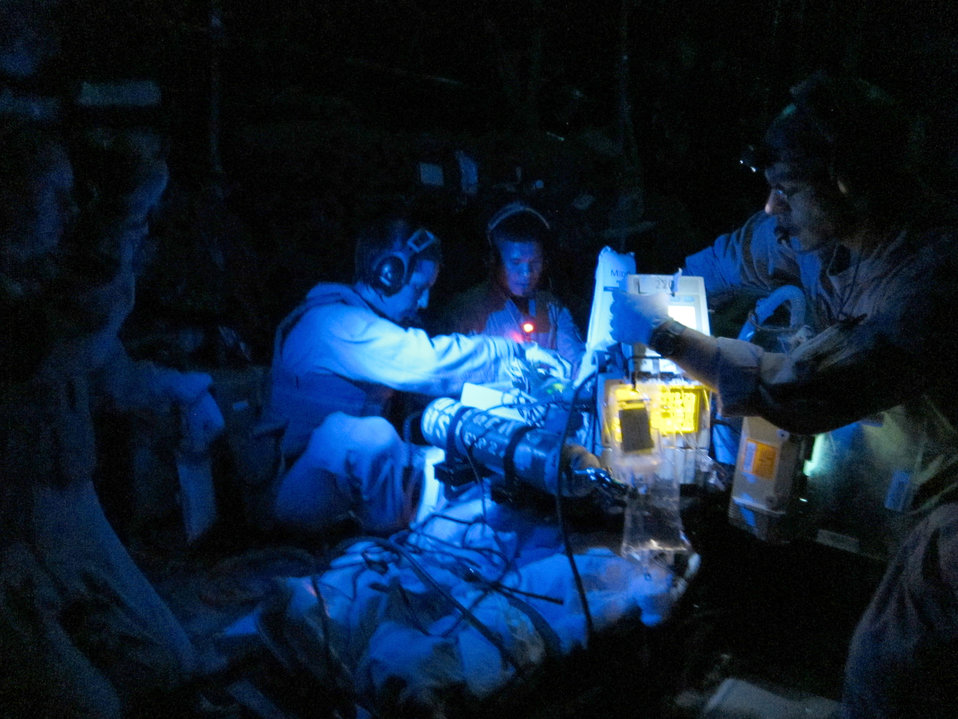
groundbreaking AE mission

Members from the 451st Expeditionary Aeromedical Evacuation detachment operate in a HC-130P King in an attempt to save two pararescumen June 9, 2010, in Afghanistan.